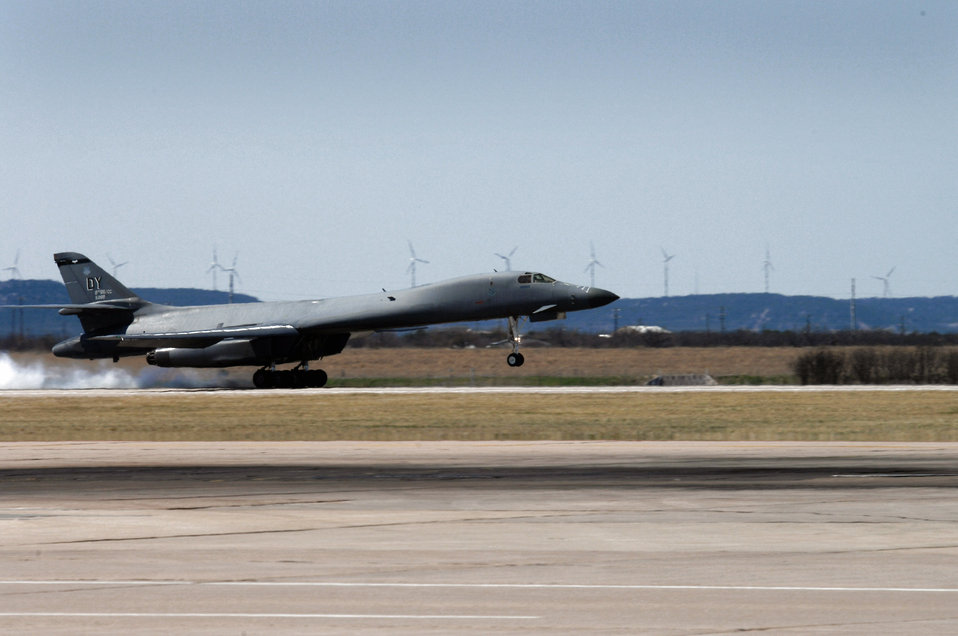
Oct. 26 airpower summary: B-1B bombs enemy fighters

An Air Force B-1B Lancer, like this one, flies close-air-support missions in support of Operation Enduring Freedom and Operation Iraqi Freedom..